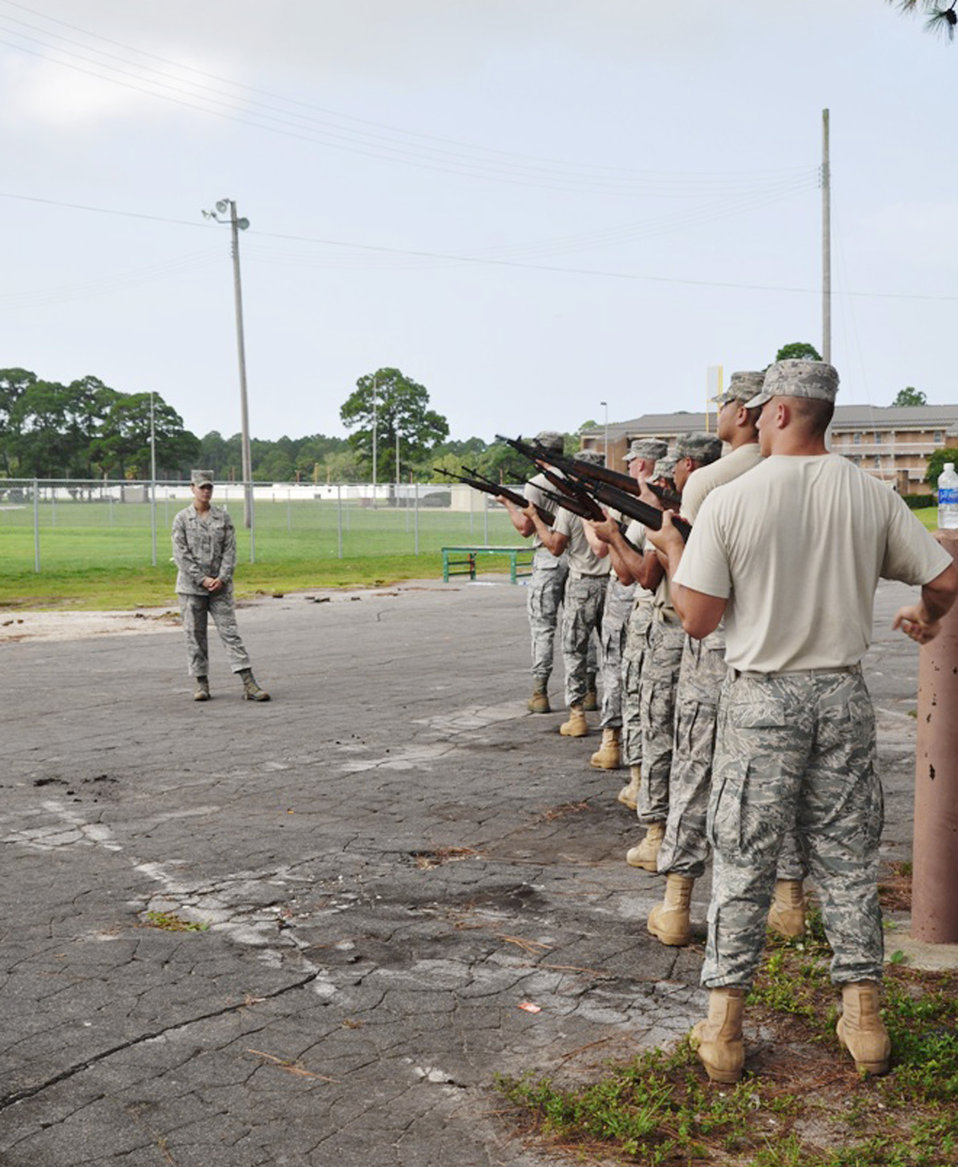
USAF Honor Guard visits Tyndall AFB

Tyndall Air Force Base Honor guard Airmen practice the gun salute for active-duty funeral ceremonies with Senior Airman Krystie Martinez. Airmen participated in a week-long training course to improve their skill and give them the ability to teach others. Airman Martinez is a visiting U.S. Air Force Honor Guard instructor.